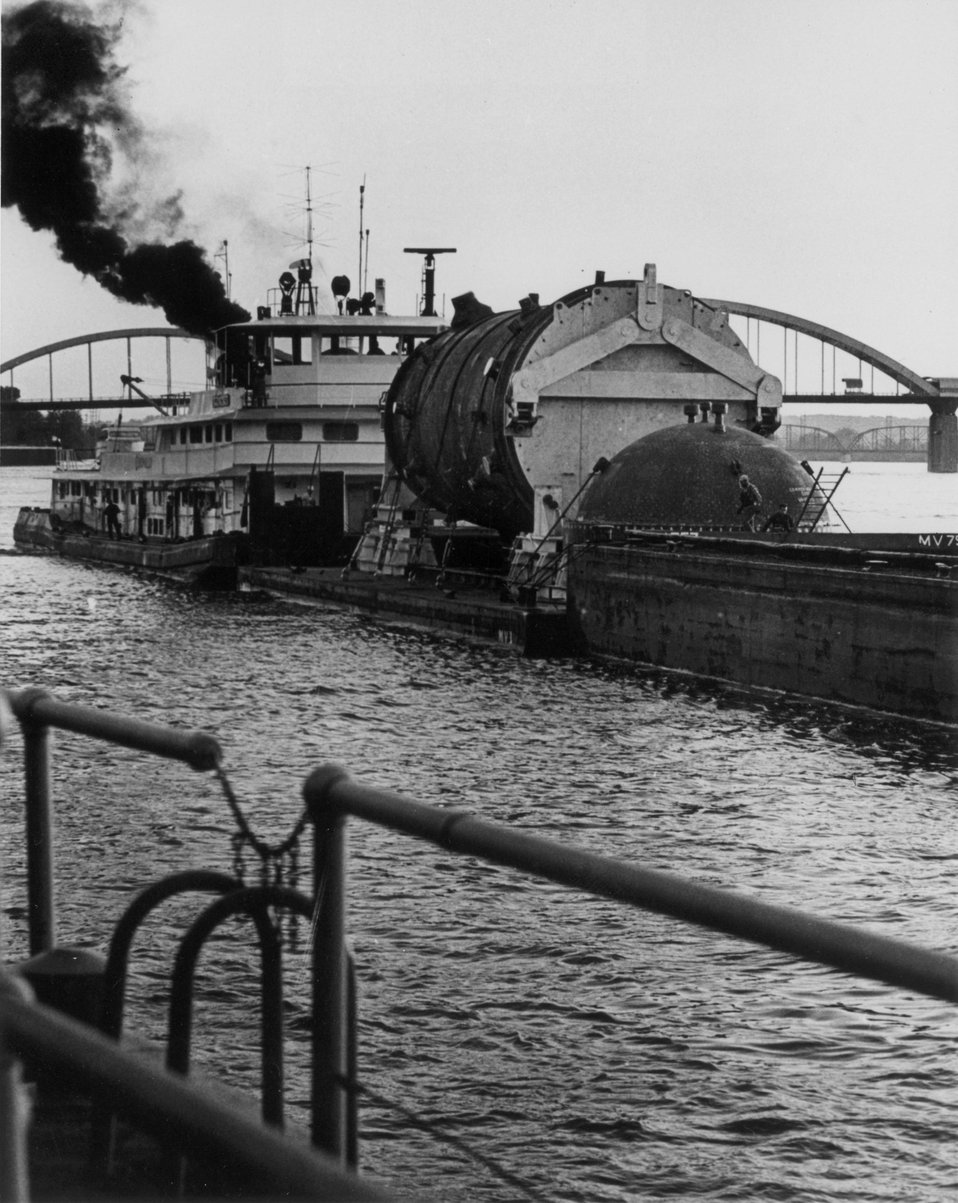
The 800 ton alloy steel vessel for the Commonwealth Edison Company's Quad-Cities nuclear power station, was shipped about 660 miles by barge along the Ohio and Mississippi Rivers from Babcock and Wilcox fabrication plant at Mount Vernon, Indiana